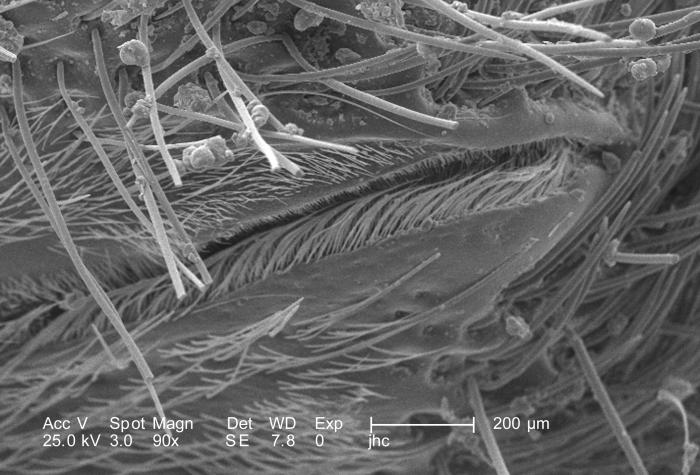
At a relatively low magnification of 90X, this scanning electron micrograph (SEM) revealed morphologic details on an unidentified region of a female velvet ant's, Dasymutilla sp., exoskeletal surface.Note the presence of sensorial 'hairs' upon the surface of the exoskeleton, which are really not hairs as in the mammalian sense, i.e., composed of keratin, but chitinous extensions composed of the same protein as that of the exoskeleton itself.The velvet ant is not really an ant at all, but a wasp, which merely resembles an ant, hence its name. It is a member of the Family, Mutillidae, and the Order, Hymenoptera. Also see PHIL 4638, 6363, and 6364 for photographs of the ant revealing its coloration, and velvety covering of external chitinous hairs.